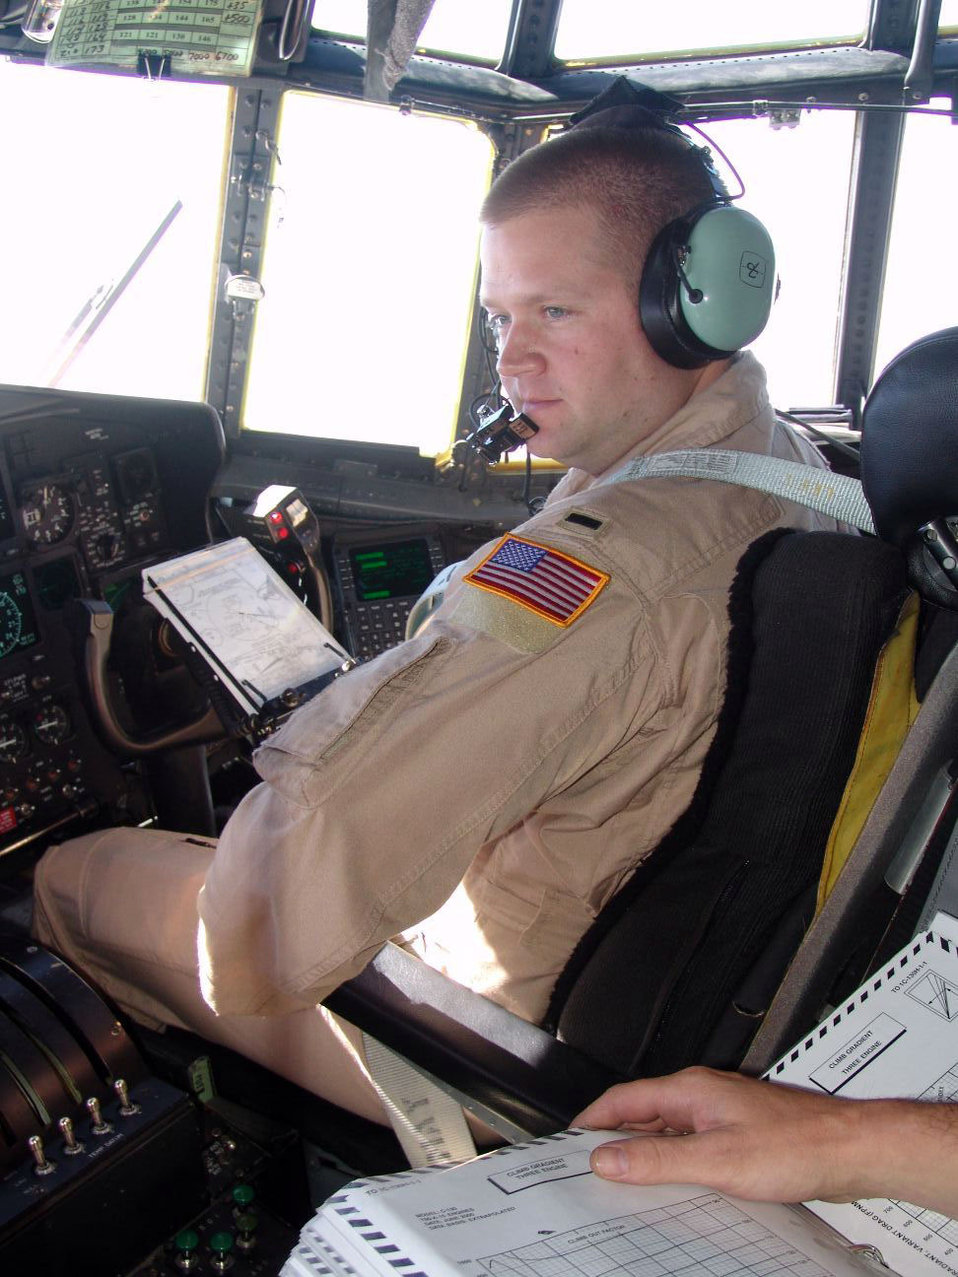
North Carolina guardsmen make combat airdrop in Afghanistan

SOUTHWEST ASIA -- Co-pilot 1st Lt. Joseph McCormick relays information with aircraft commander Maj. Jaye Stepp before an airdrop mission over Afghanistan. Major Stepp and Lieutenant McCormick are assigned to the 738th Expeditionary Airlift Squadron at a forward-deployed location and are deployed from the North Carolina Air National Guard's156th Airlift Squadron.